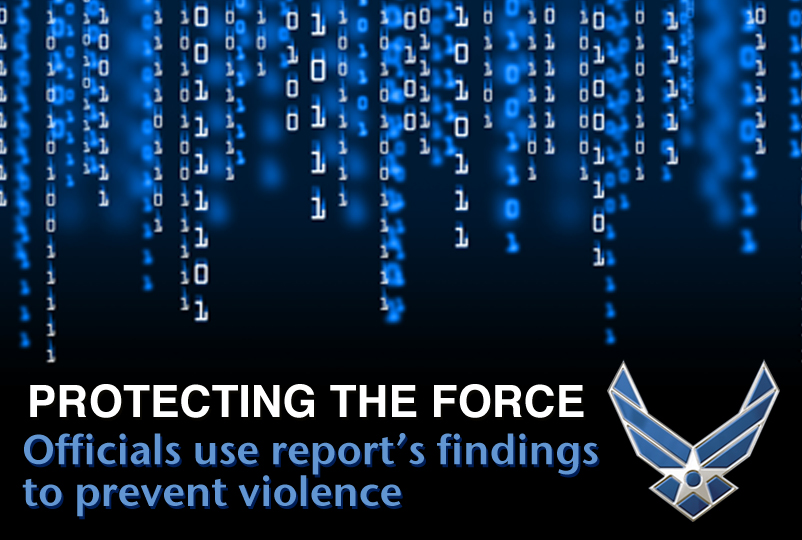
Protecting the force